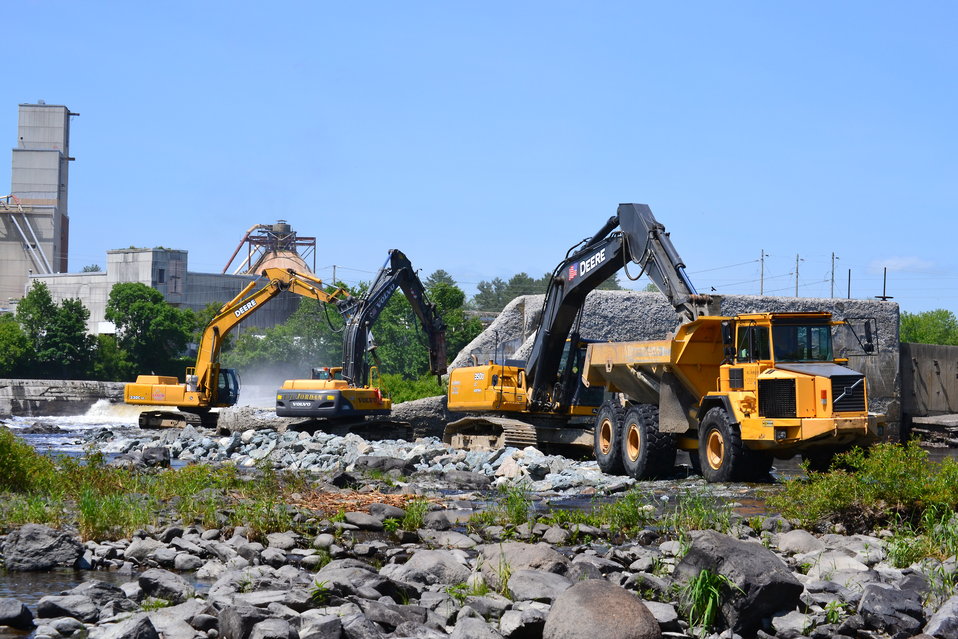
Demolition begins